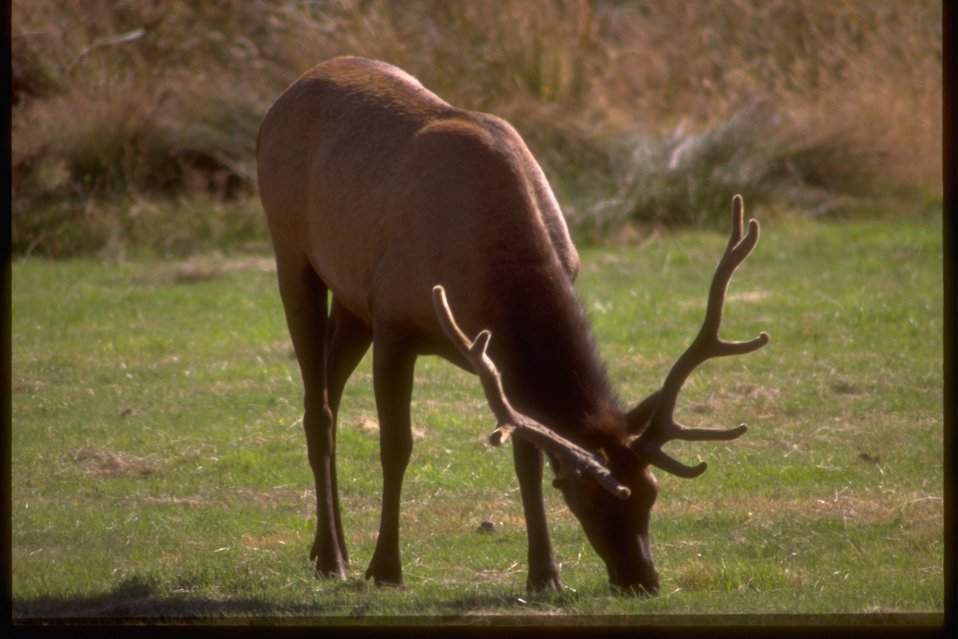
Deen Creek Elk.